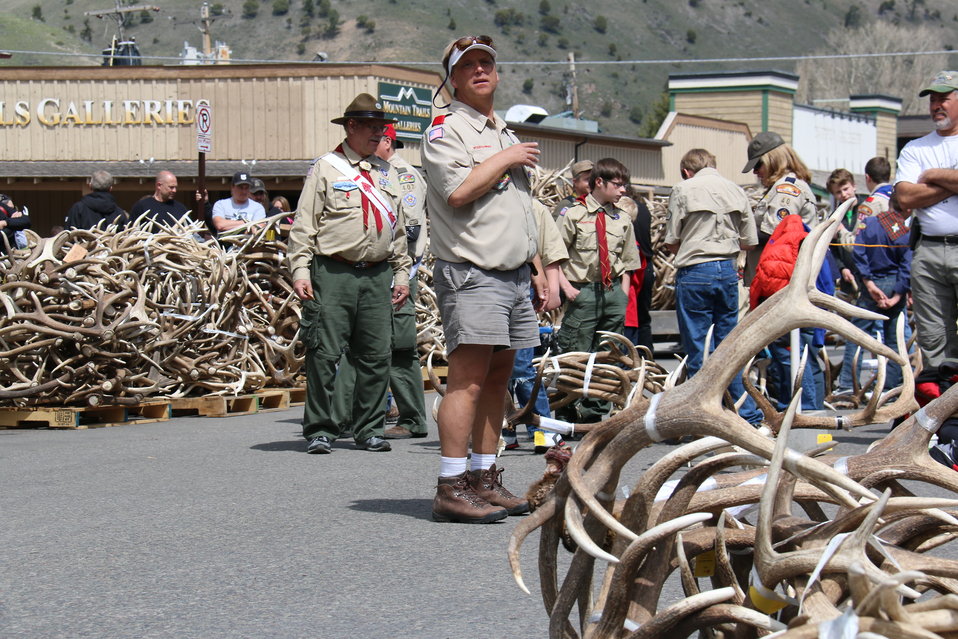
Watching for a Signal

A Scout leader assists the auctioneer watching for bidders signaling their interest with a nod or flash of their number.